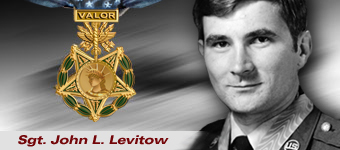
John L. Levitow

Sgt. John L. Levitow, Medal of Honor recipient.